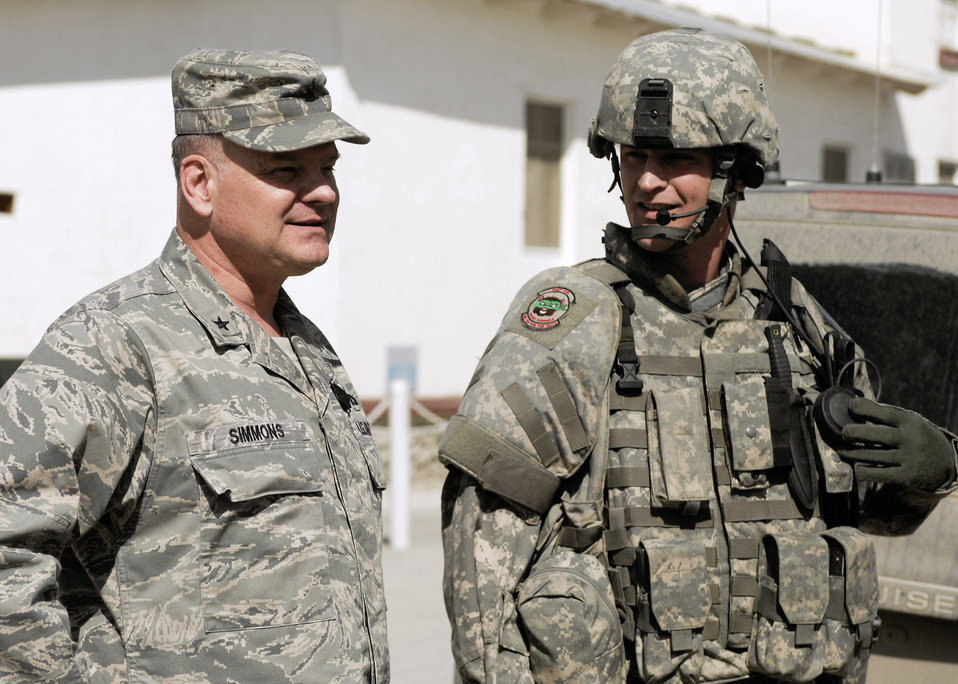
Top agents praise OSI efforts within Afghanistan

Brig. Gen. Dana Simmons speaks to Tech. Sgt. Brett Brockway before going out on a mission Feb. 25 at Bagram Airfield, Afghanistan. The general spoke with Airmen and Department of Defense civilians contributing to Office of Special Investigations missions in Afghanistan. General Simmons is the Air Force OSI commander. Sergeant Brockway is assigned to the Expeditionary Detachment 2405.